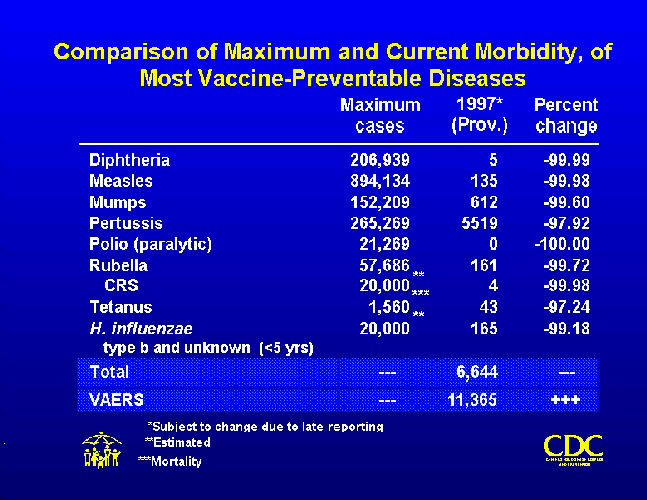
Comparison of maximum and current morbidity of most vaccine-preventable diseases.